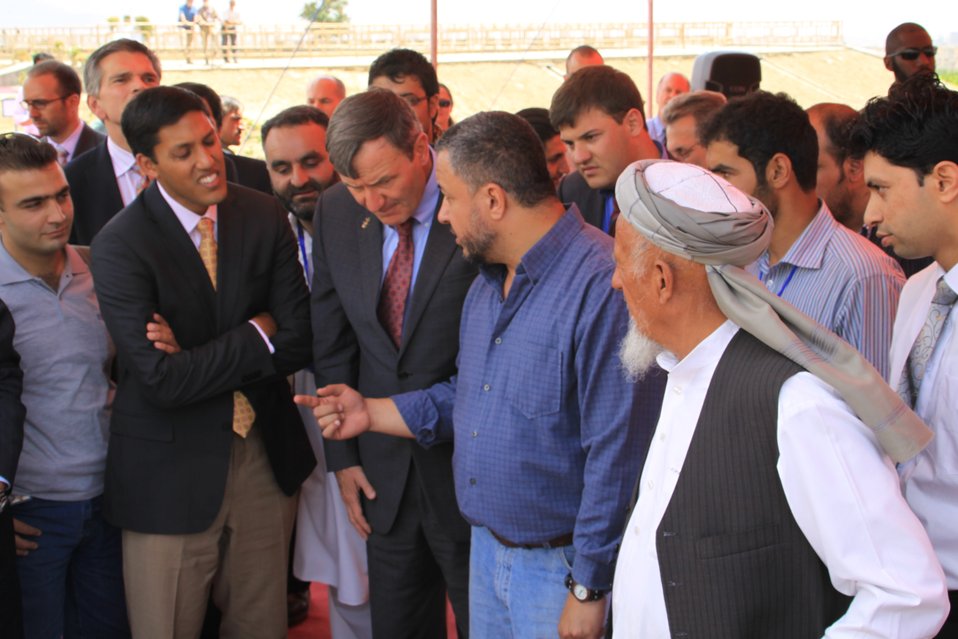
Badam Bagh Farm